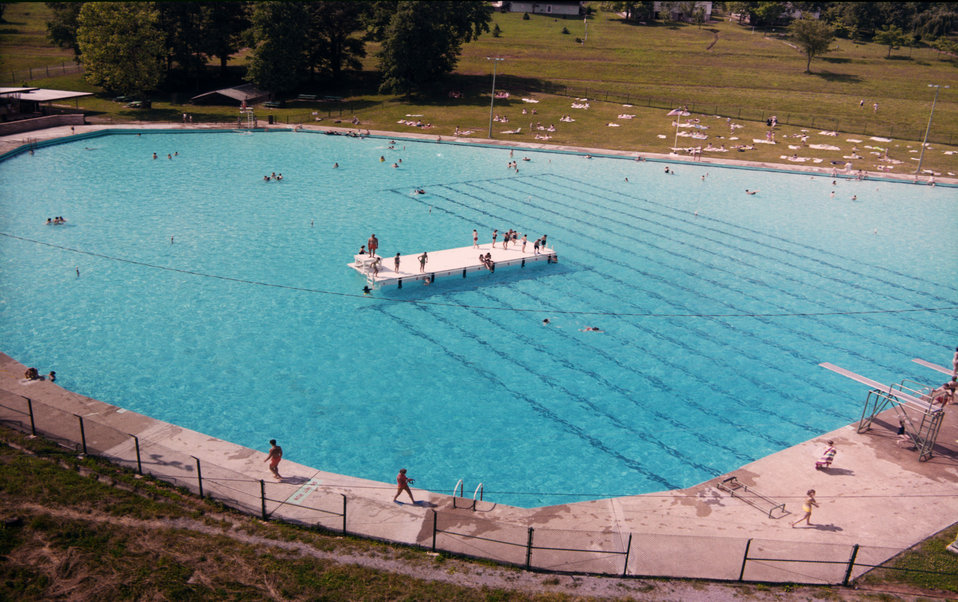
Oak Ridge Swimming Pool 1968

68-129-12 DOE photo Frank Hoffman 6-4-1968 Oak Ridge Tennessee